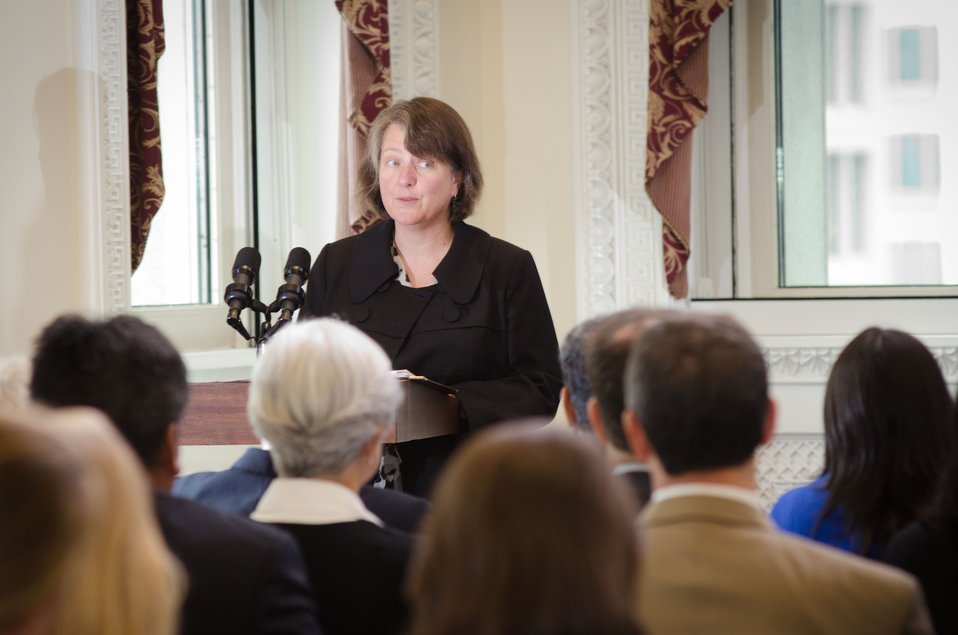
Agriculture Deputy Secretary Dr. Kathleen Merrigan addresses the eleven individuals being honored for their efforts to reduce hunger and increase food security in the U.S. and internationally at the White House Champions of Change Strengthening Food Security at Home and Abroad Event held at the White House on Thursday, September 6, 2012, in Washington, D.C.. They include, World Food Prize Foundation President Kenneth Quinn; Auburn University (Alabama) College of Human Sciences Dean Dr. June Henton; Mandela MarketPlace Executive Director Dana Harvey; East Lake United Methodist Church Pastor Reverend Sally Allocca; Joshua’s Heart Foundation President Joshua Williams; Community Food Advocates, Inc. Co-Director Kathy Goldman; United for Healthy Schools Leader Jovita Flores; Catholic Medical Mission Board Project Director Dr. Claudia Llanten; Fort Valley State University (Georgia) Research Professor Interim Assistant Dean Dr. Govind Kannan;Tohono O’odham Community Action Co-Founder and President Terrol Johnson; and not pictured, Thriive Founder Erik Schultz).